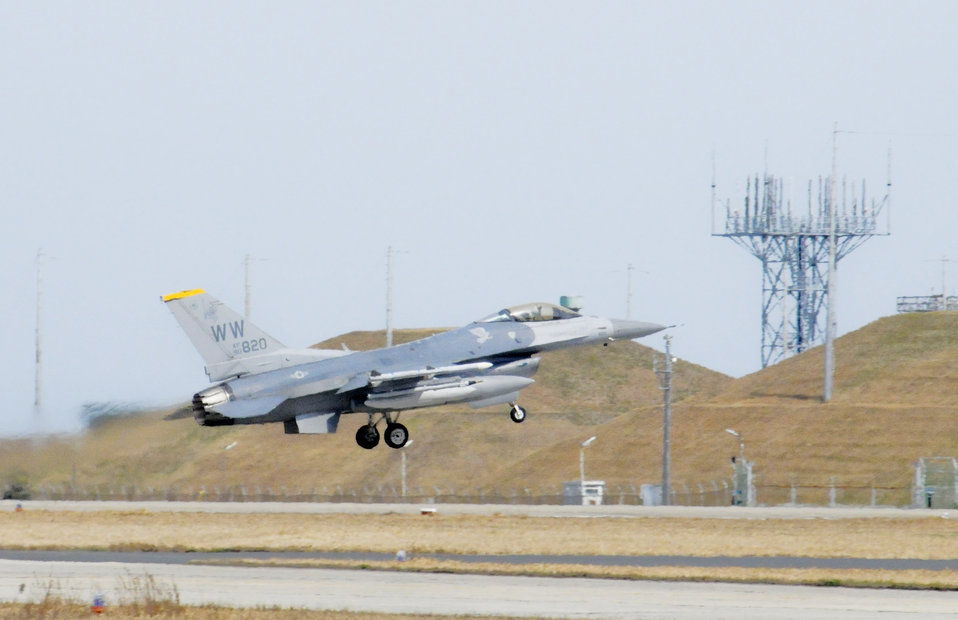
ATR exercise concludes

The last F-16 Fighting Falcon from the 14th Fighter Squadron takes off signaling an end to the aviation training relocation exercise March 12, 2010, at Tsuiki Air Base, Japan.